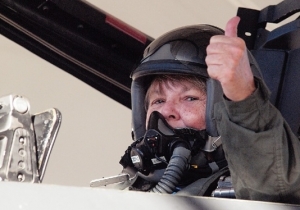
Taking Jared's flight

Gold Star Mother Janet Monti gives the thumbs-up before taking flight in an F-15E Strike Eagle Nov. 10, 2010, at Seymour Johnson Air Force Base, N.C. Her son, Army Staff Sgt. Jared Monti, always wanted to be a pilot, but joined the Army instead. More than four years after his heroic death in Afghanistan, his mother was given a chance to live her son's dream.